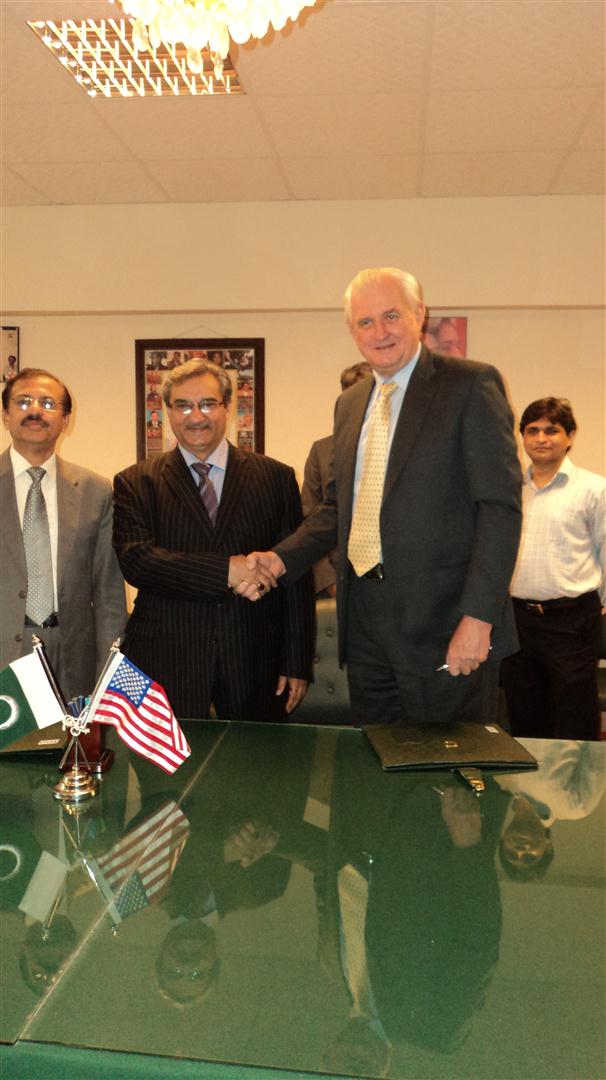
MoU between GoS and USAID

Karachi, September 4, 2012 - Deputy Mission Director, U.S. Agency for International Development (USAID), Edward Birgells, and Secretary of Education, Mukhtar Hussain Soomro, signed a Memorandum of Understanding (MOU) to repair and rehabilitate flood damaged schools in the four southern Sindh districts: Mirpurkhas, Sanghar, Umerkot and Tando Allahyar. The USAID’s $ 4 million commitment will assist in rehabilitation of selected public schools damaged in the 2011 floods in the four target districts.